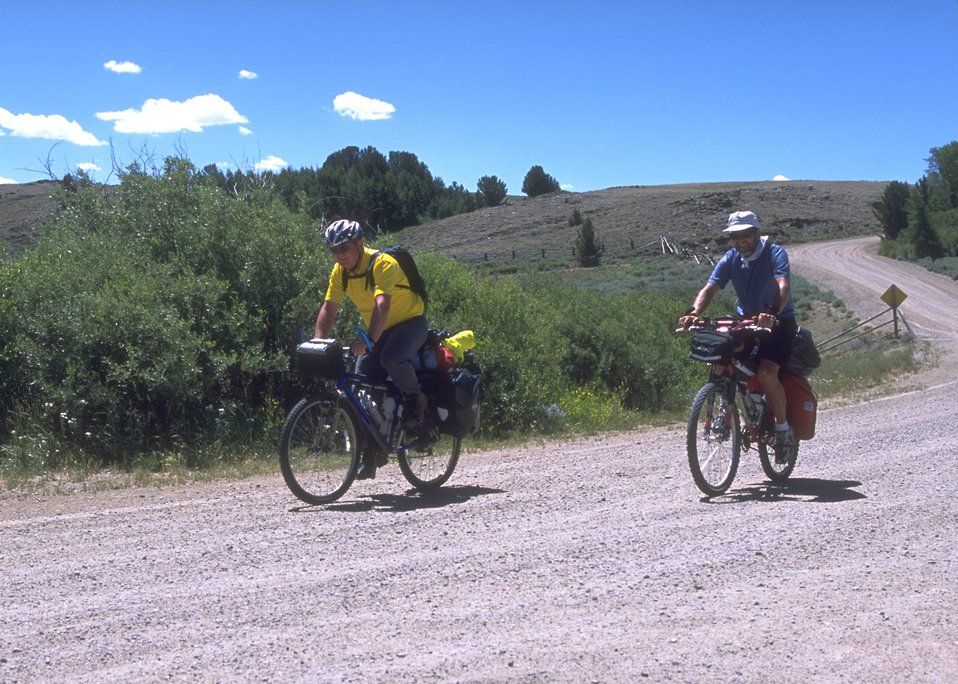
Biking the Continental Divide Trail at South Pass City, Lander Field Office.